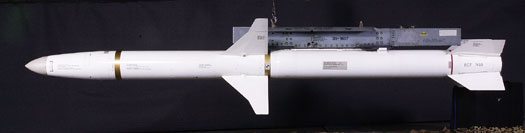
AGM-88 HARM